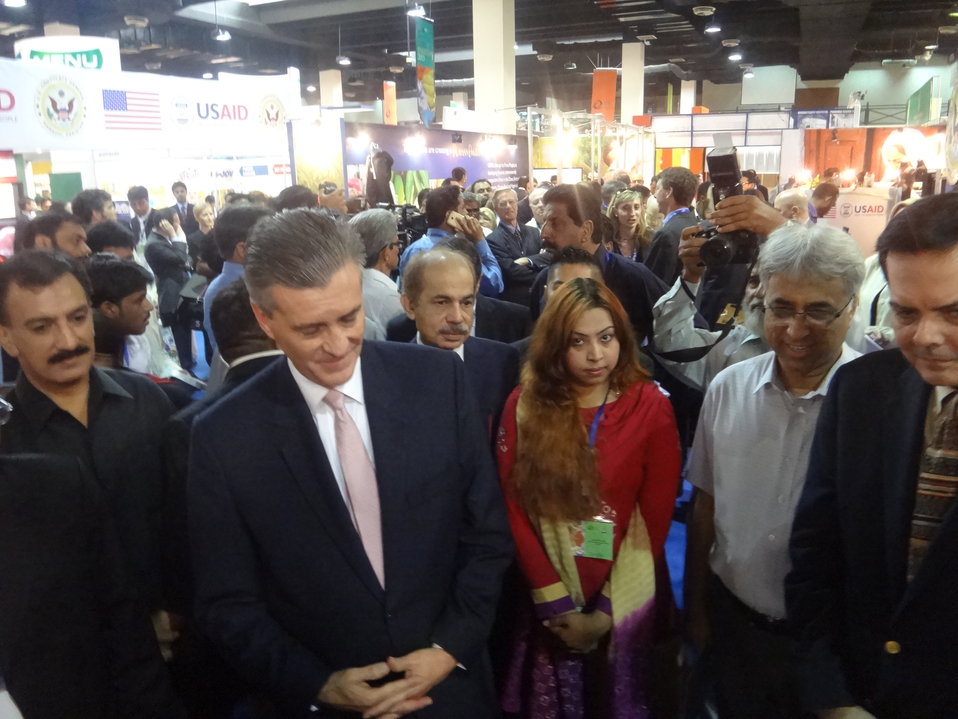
US Ambassador's visit to The Agribusiness Project at TDAP Expo, Karachi, September 27, 2013